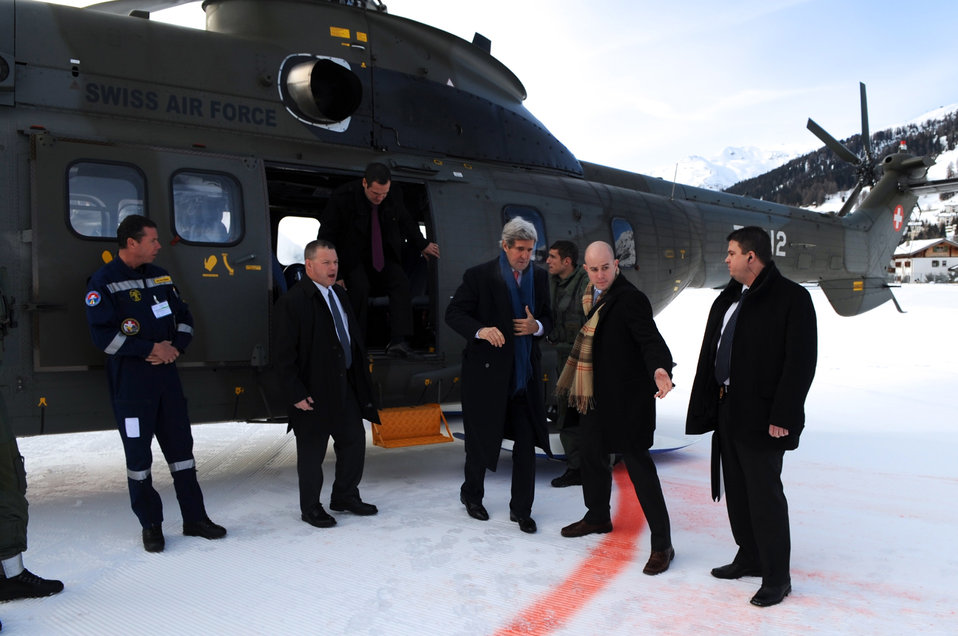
Secretary Kerry Arrives in Davos for World Economic Forum Speech

U.S. Secretary of State John Kerry steps off a Swiss Air Force helicopter after arriving in Davos, Switzerland, on January 23, 2014, for meetings, an interview, and a speech to the World Economic Forum.